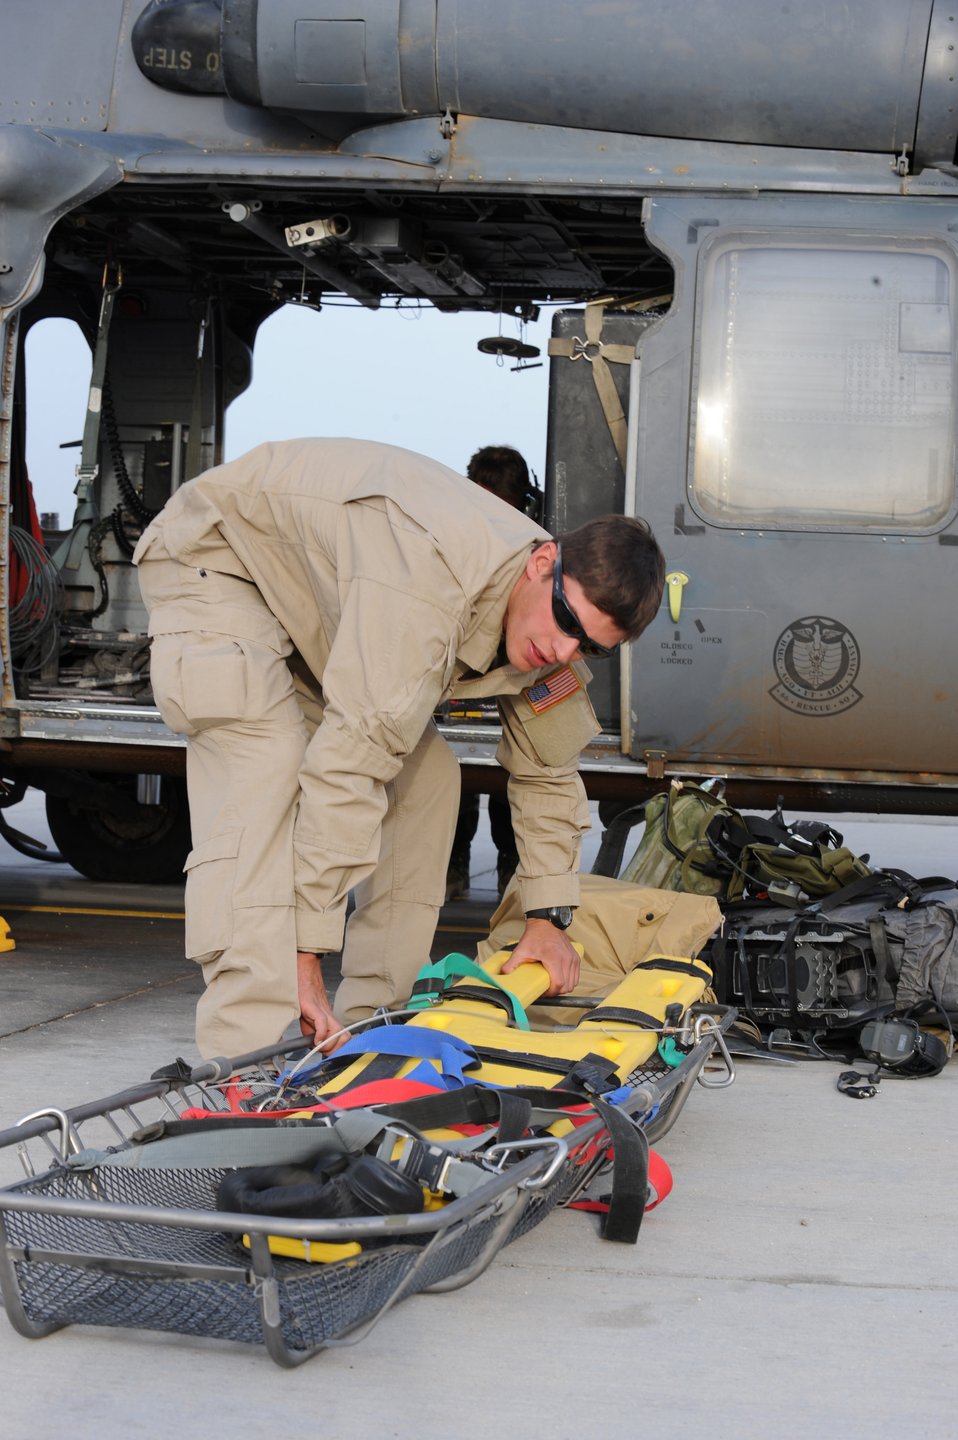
Nellis Airmen locate missing aircraft

Senior Airman David Coval prepares to load a litter onto an HH-60G Pave Hawk prior to departing for a rescue mission May 1 at Nellis Air Force Base, Nev. Four helicopters and 24 Airmen from the 58th and 66th Rescue Squadrons deployed to assist in the search for a pilot and passenger who were aboard a motorized sailplane that disappeared from radar April 24 in the Sierra Nevada Mountain Range near Mammoth Lakes, Calif. Airman Coval is a pararescueman with the 58th Rescue Squadron.